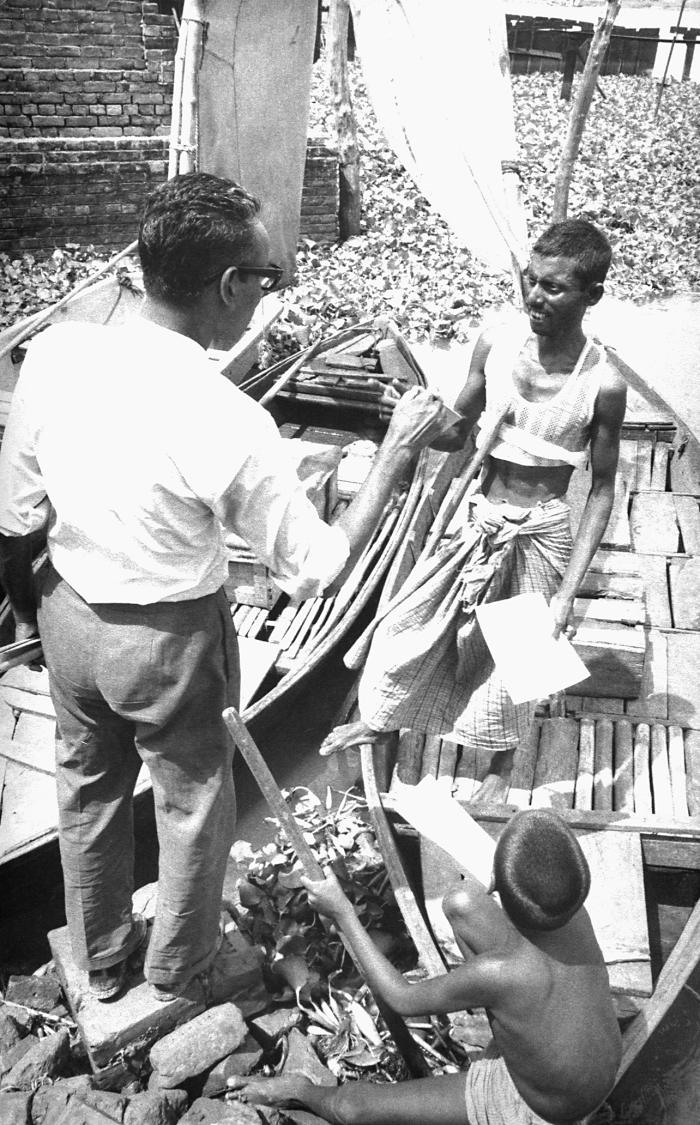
This eradication team member was in the process of making his rounds throughout one of the Bangladesh villages, whereupon, he would hand out the requisite leaflets describing the disease, an announcement of the reward associated with reporting confirmed smallpox cases to the appropriate health officials, and a photograph, which he's shown handing to a resident showing a child's face displaying the classic maculopapular smallpox rash.